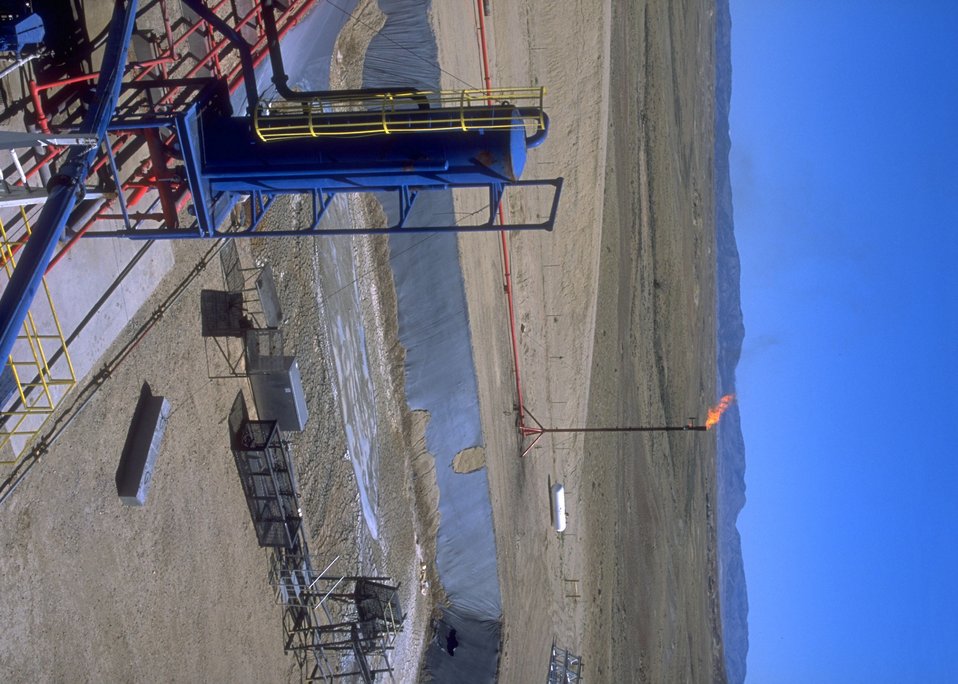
Supporting facilities on the Burlington Northern deep well rig, Casper Field Office.